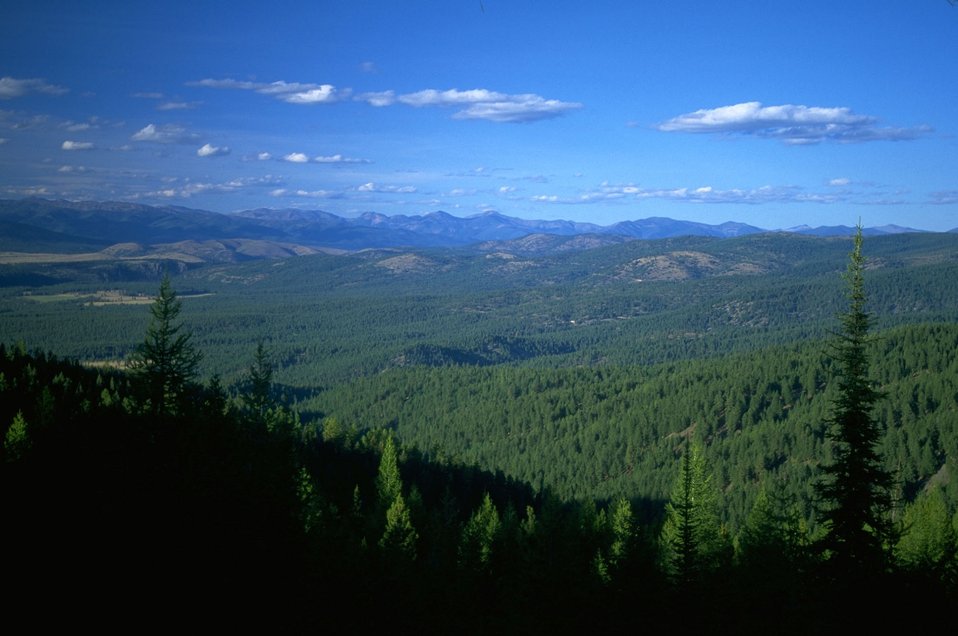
Garnet Back Country Byway--view from overlook